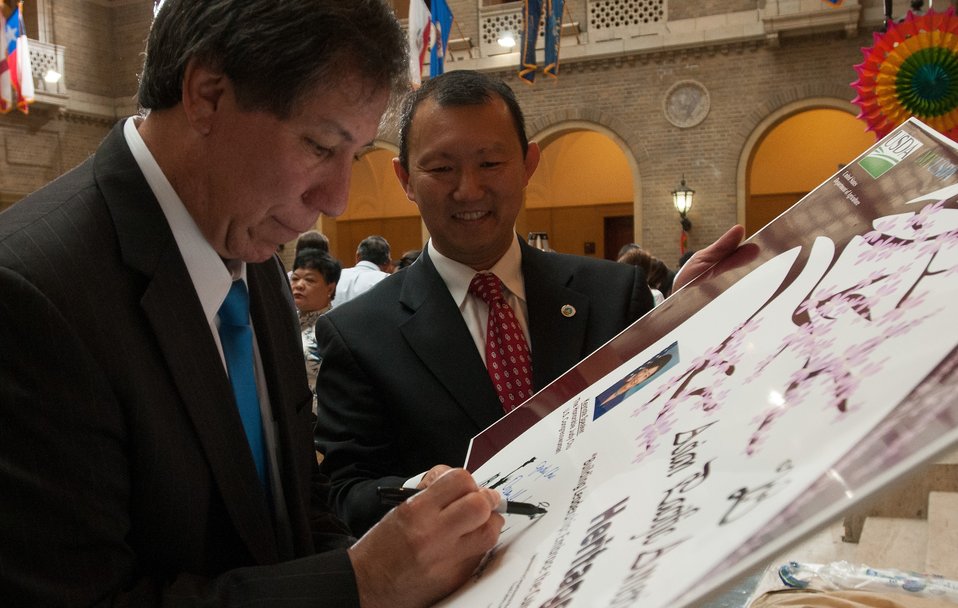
U.S. Department of Agriculture (USDA) Marketing and Regulatory Programs Under Secretary Edward Avalos adds his signature to the collection of other USDA and government leaders’ signatures on the announcement board for the U.S. Department of Agriculture’s (USDA) Asian Pacific American Heritage Month Observance, at the USDA headquarters, Whitten Building patio, in Washington, D.C., on Thursday, May 23, 2013. This year’s theme is “Building leadership; Embracing the Cultural Values and Inclusions.”